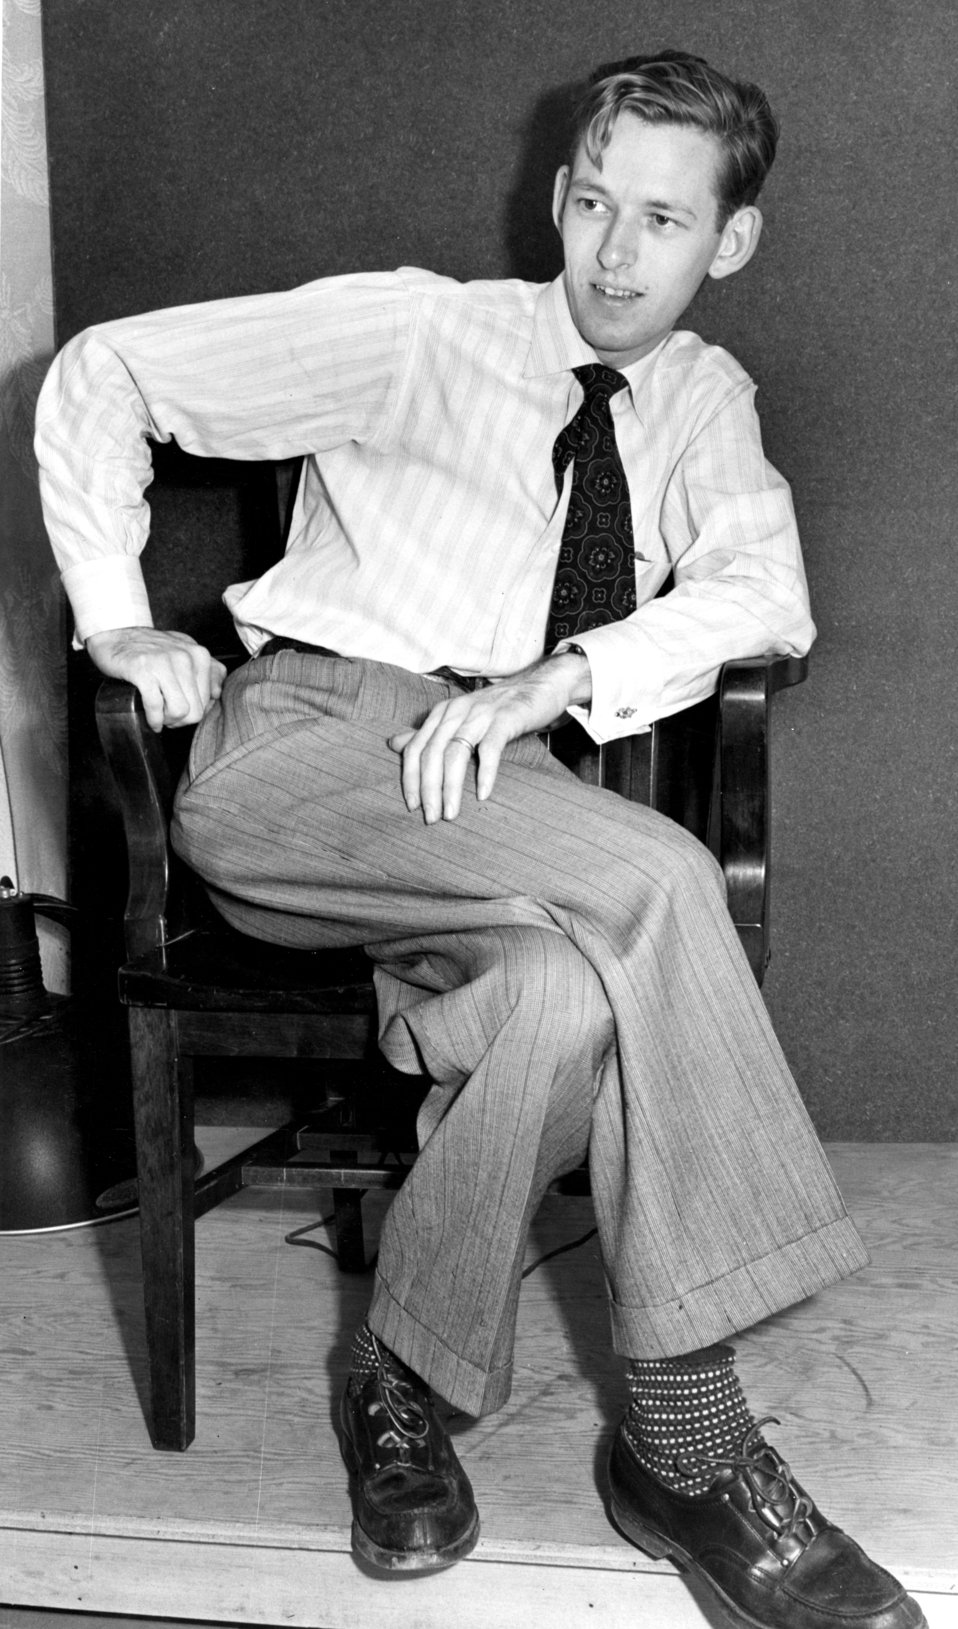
Ed Westcott AEC Photographer Oak Ridge 1940s

DOE photo Ed Westcott at his studio in Oak Ridge 1940s Oak Ridge Tennessee